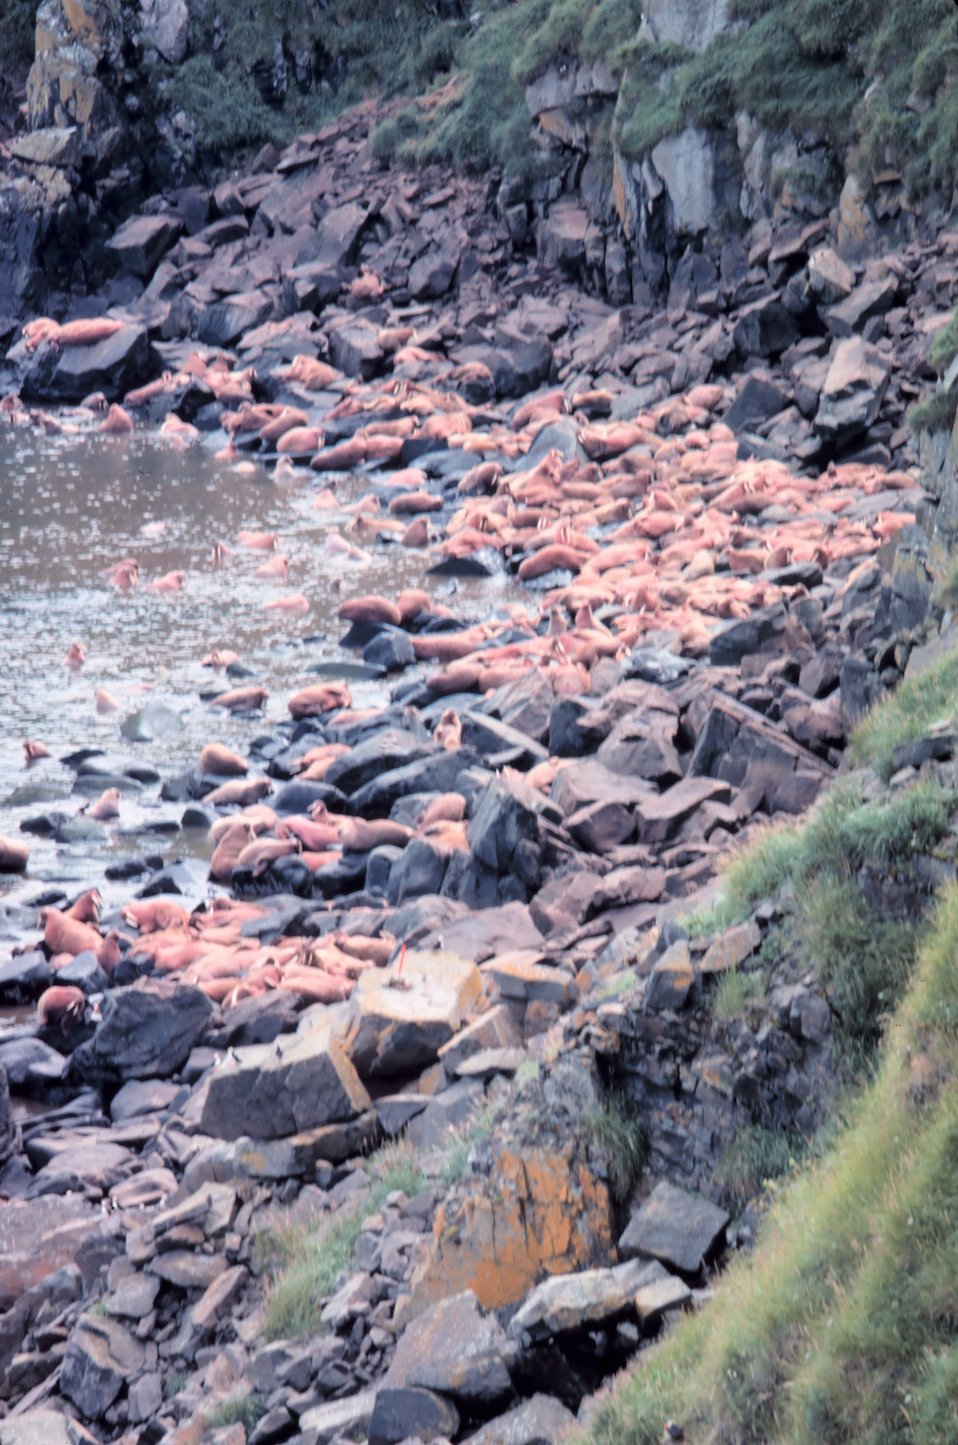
Walrus - Odobenus rosmarus divergens - on Bering Sea island.